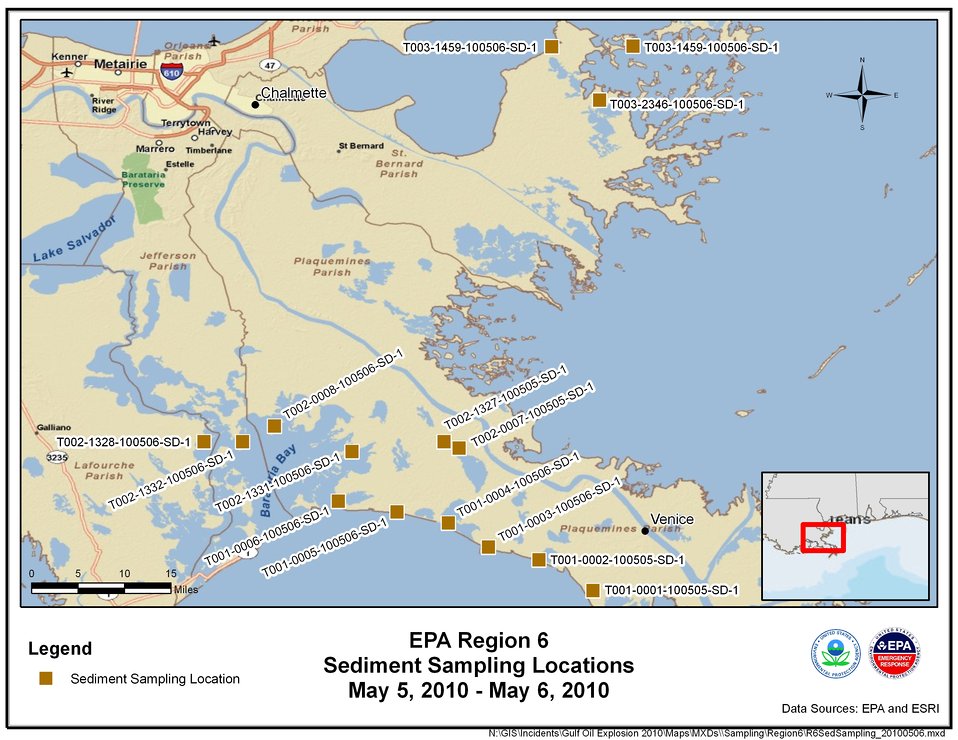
EPA Sediment Sampling Locations May 5-6, 2010